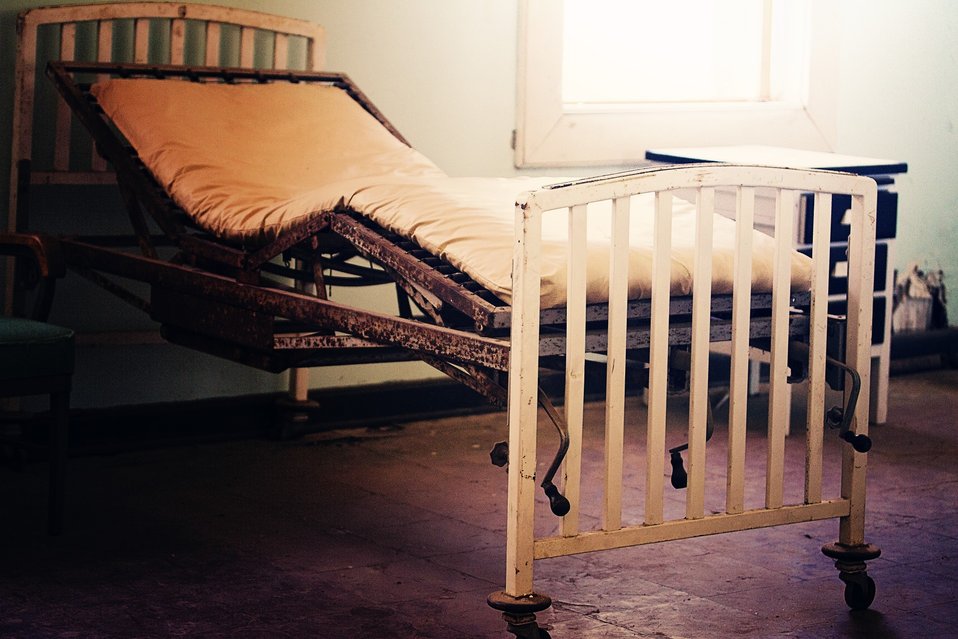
Old hospital bed

An old hospital bed in an abandoned building.